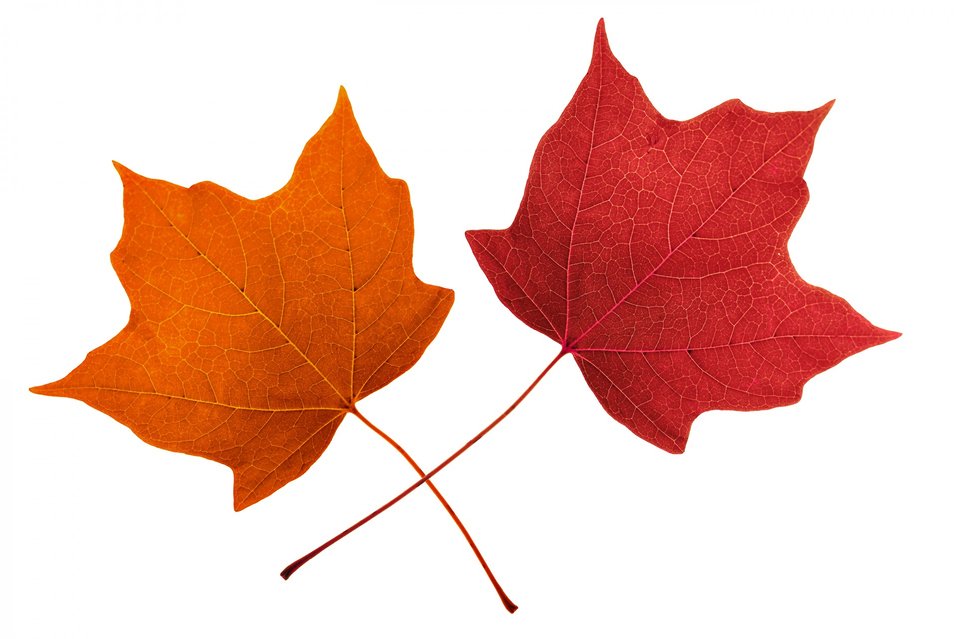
Maple leaves

Red and orange maple leaves.